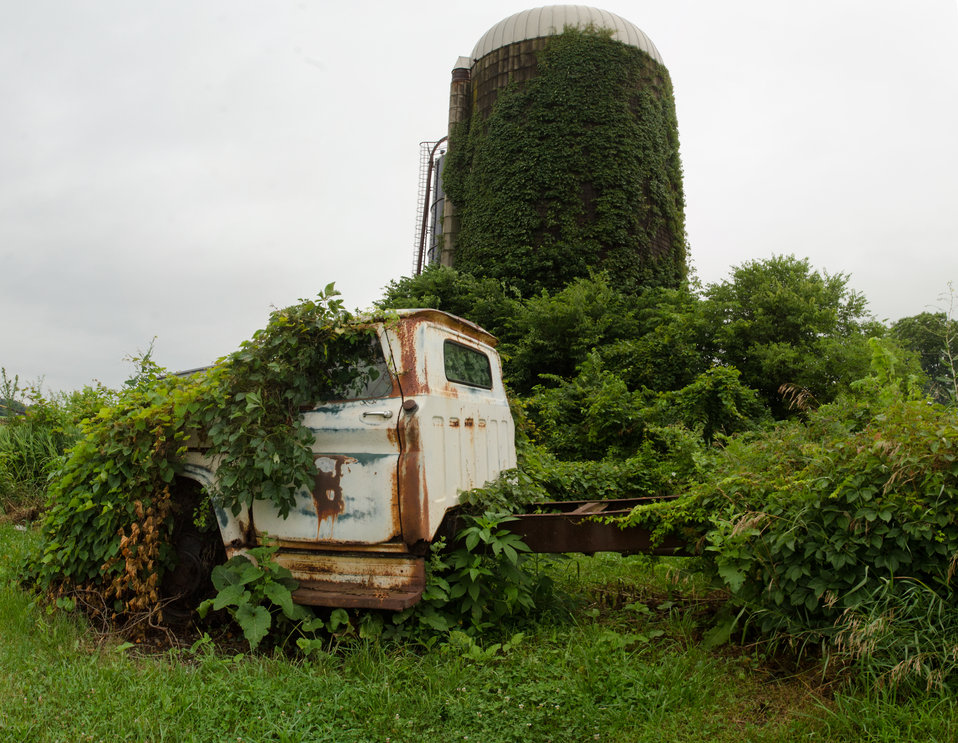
As with most farms, there are rustic buildings and vehicles to give contrast to the inovative things going on at Nick’s Organic Farm, owned by Nick Maravell, in Adamstown, MD on Friday, July 12, 2013. The farm produces Black Angus beef, chicken, turkey, eggs, hay, soybeans, corn, alfalfa, orchard grass, rye; and other crops. The cattle are 100% grass-fed receiving certified organic pasture, certified organic hay (in winter), water and mineral salts mixed with sea kelp. The cattle are not fed hormones, antibiotics or animal products. Poultry feed from grain is ground from organic grain. The poultry also graze on organic pastures. The farm has conducted on-farm research with federal, state and non-profit agencies to refine organic practices. An organization such as the U.S. Department of Agriculture (USDA) Agricultural Research Service (ARS) center in Beltsville has been able to conduct research to improve organic crops and to breed and manage the cattle so that they have. George Kloph is the farm assistant at this site.